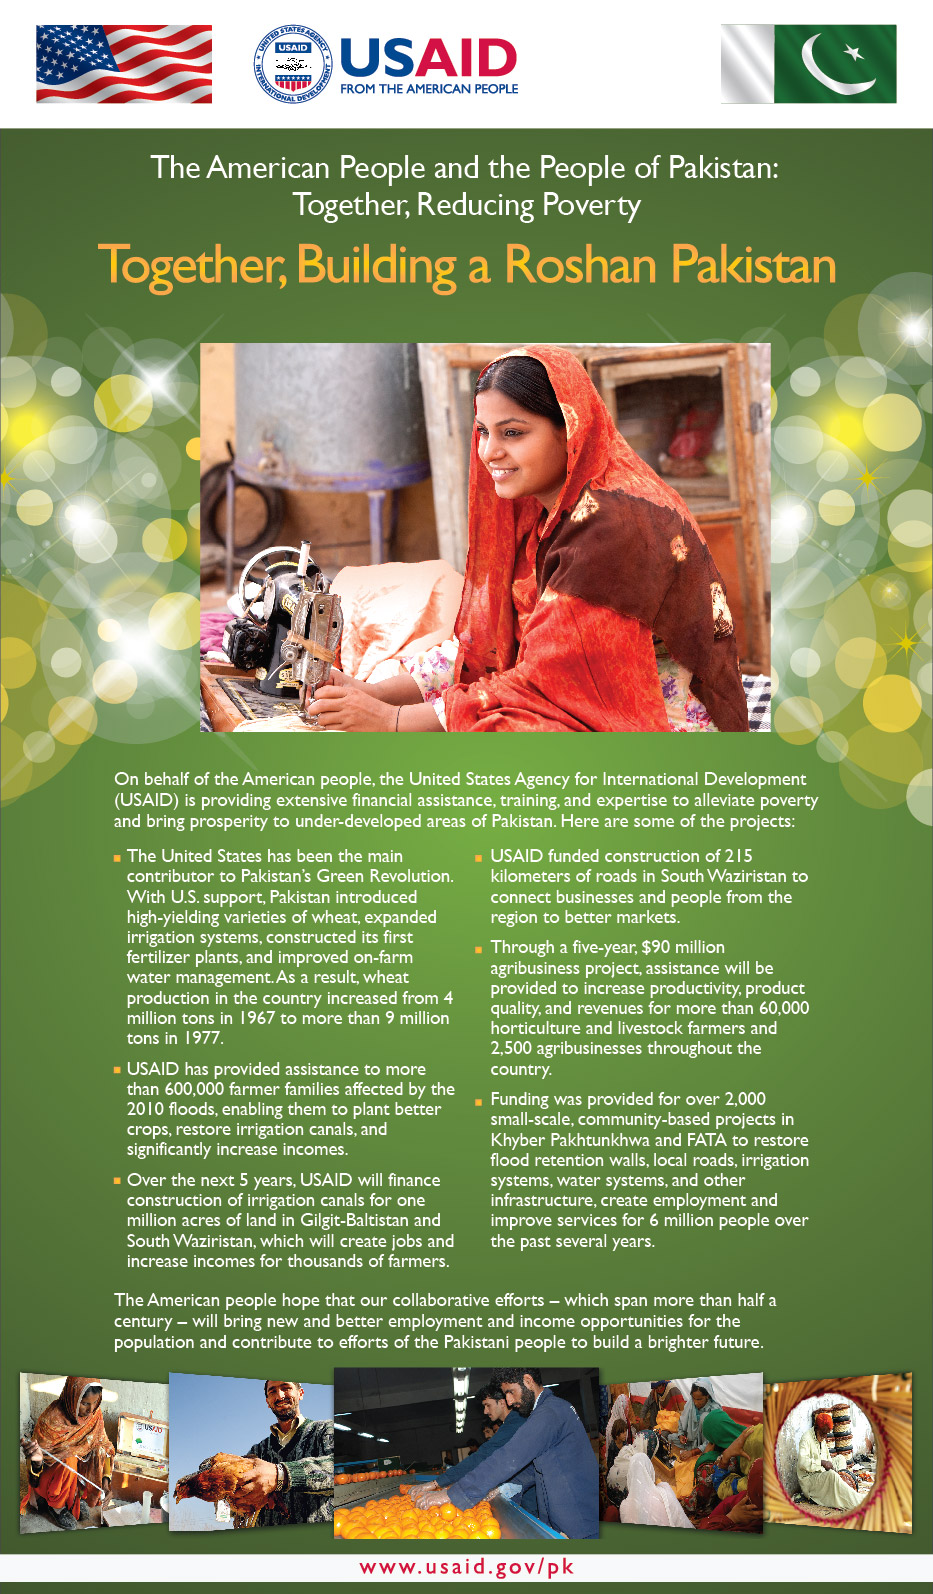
Together, Reducing Poverty in Pakistan